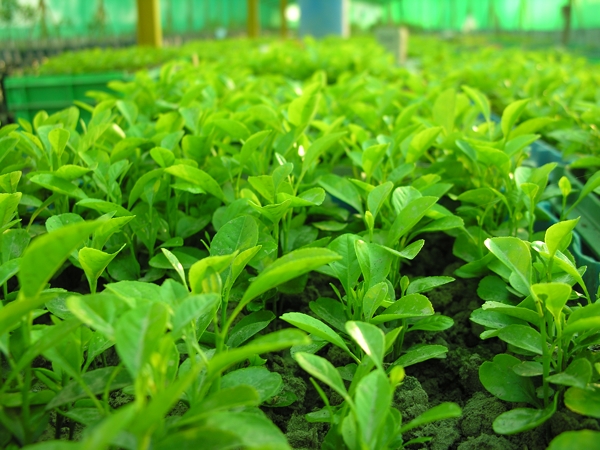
m DSCN4135